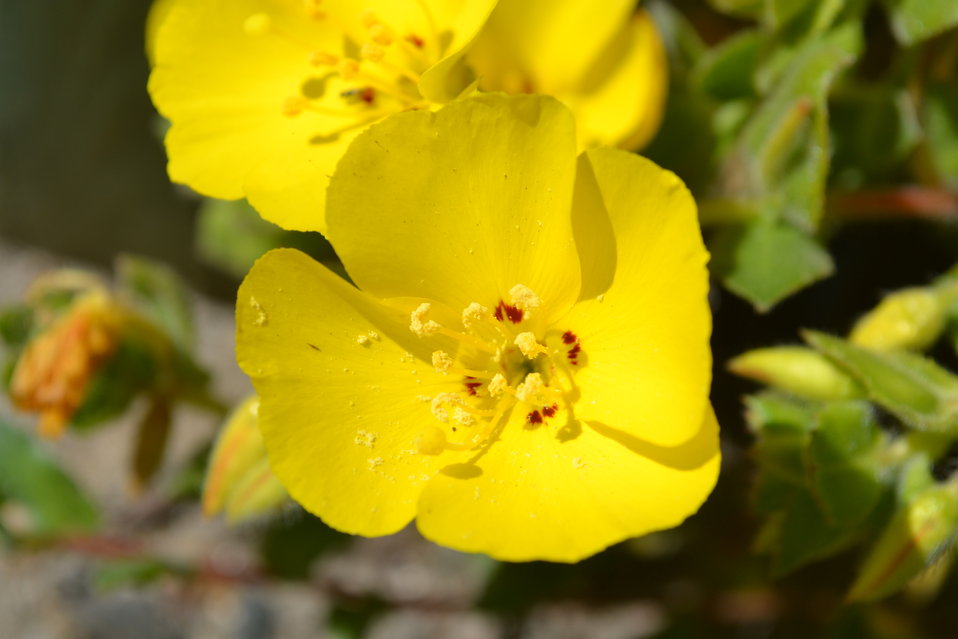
Beach evening primrose (Camissonia cheiranthifolia)

A native dune species, this gorgeous yellow flower blooms from April to August.